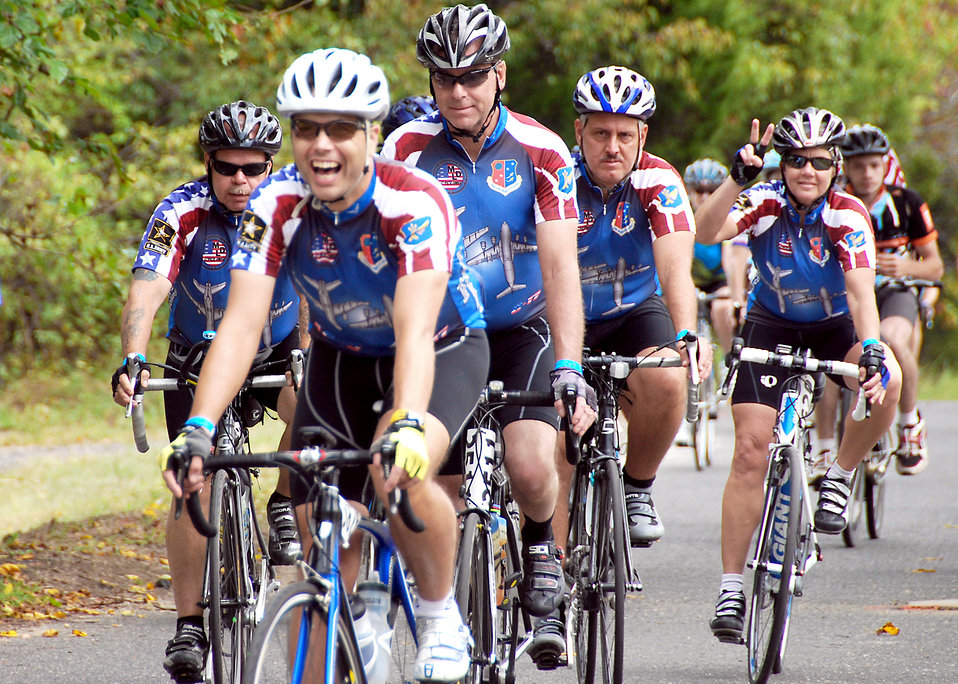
MS ride 2010

Members of the McGuire-Dix-Lakehurst cycling team ride Sept. 25-26 during the annual two-day Multiple Sclerosis City to Shore Ride 2010. The team of Air Force and Army servicemembers and civilians raised more than $13,000 for the National Multiple Sclerosis Society.